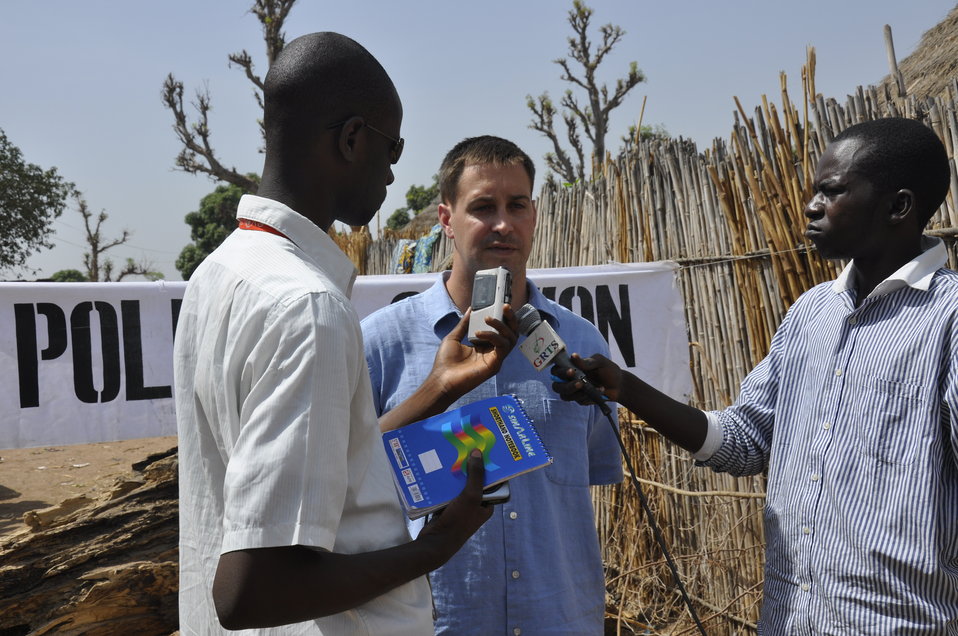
Embassy Immersion Program

Maj. J. Marshall Preston, (center) a political-military affairs
strategist, is interviewed by national media after observing local elections
in The Gambia in April 2011. Preston was in The Gambia as part of the
Embassy Immersion Program.